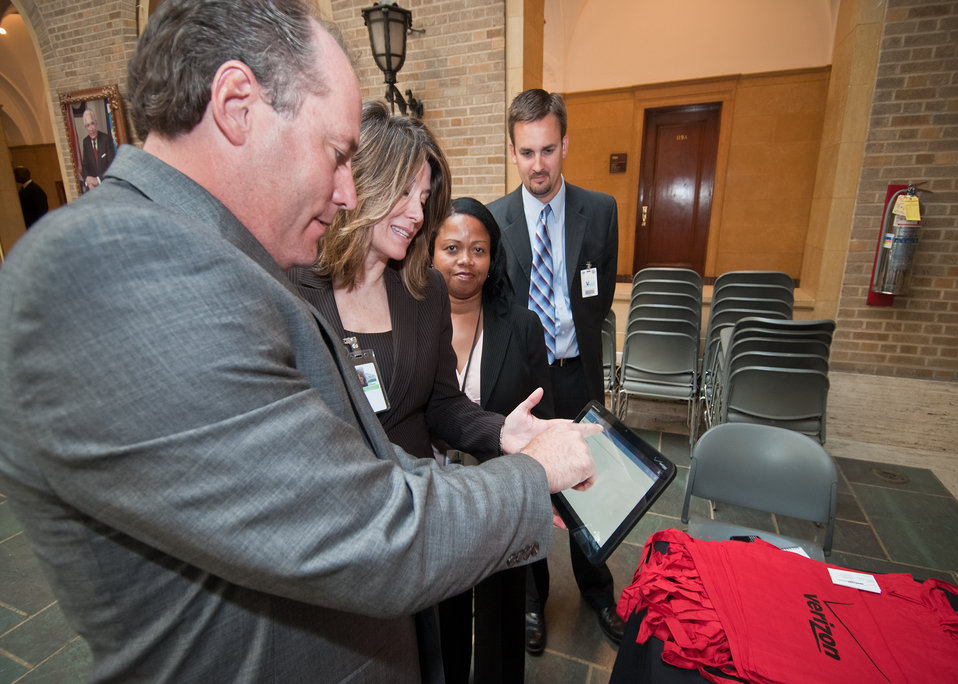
From left: Gene Haffner, Federal Account Manager, Verizon, Donna Miller, Sherri Hines and Casey Steele, Director, Verizon demonstrate telework equipment available from Verizon for employees of the United States Department of Agriculture during a “Telework Program Party/Brown Bag” event on the patio of the Jamie Whitten Building of United States Department of Agriculture, in Washington, DC, on Tuesday, June 7, 2011. The event included an interactive telework panel and exhibits from the field of telework, telecommuting and mobile work environments. The event was open to all USDA employees, supervisors, managers, human resources staff and USDA telework program coordinators.